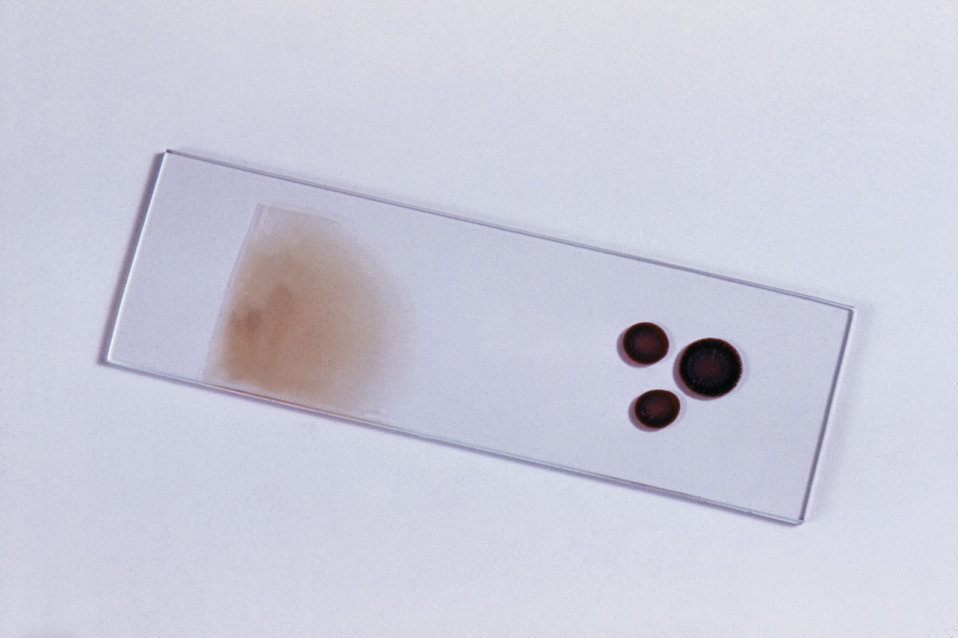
This slide preparation yielded a poor result, which included improper 'puddling' of the thick film, and a 'marginal' thin film.